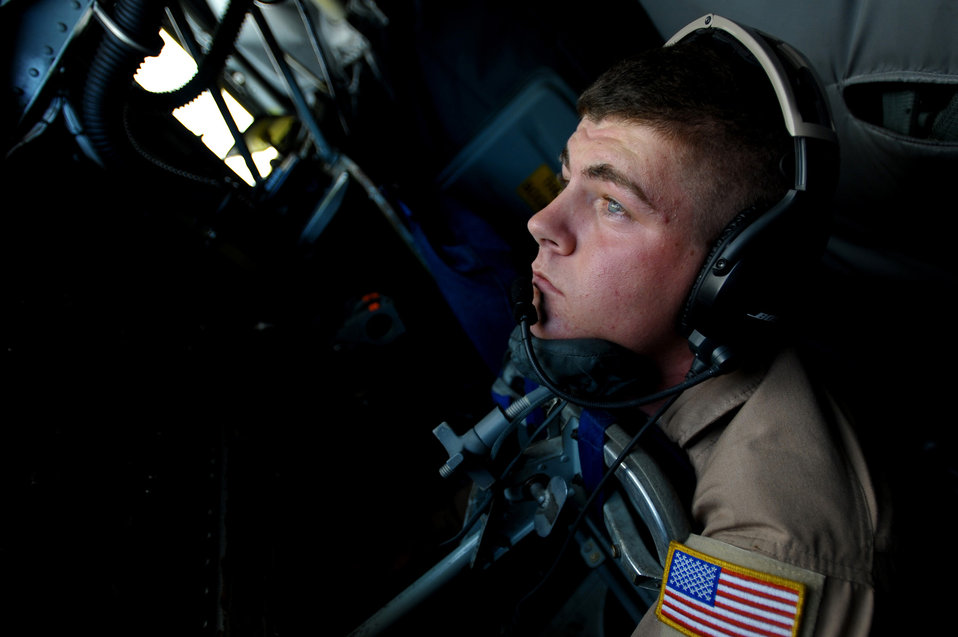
Refueling the fight

Airman 1st Class Michael Voorhees controls the refueling boom on a KC-135 Stratotanker during a mission May 8, 2011, above Afghanistan. Airman Vorhees is a boom operator assigned to the 340th Expeditionary Air Refueling Squadron.